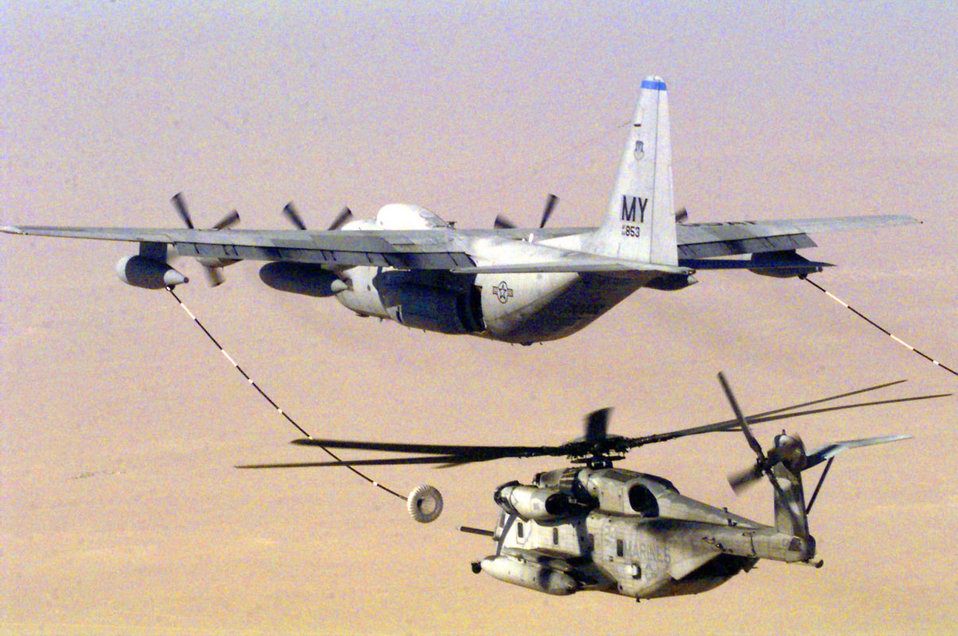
Thirsty Super Stallion

FILE PHOTO -- An Air Force MC-130P Combat Shadow refuels a Marine Corps CH-53E Super Stallion. The MC-130P flies clandestine or low visibility, low-level missions into politically sensitive or hostile territory to provide air refueling for special operations helicopters. The MC-130P primarily flies its single- or multi-ship missions at night to reduce detection and intercept by airborne threats. Secondary mission capabilities include airdrop of small special operations teams, small bundles, and zodiac and combat rubber raiding craft; as well as night-vision goggle takeoffs and landings, tactical airborne radar approaches and in-flight refueling as a receiver.